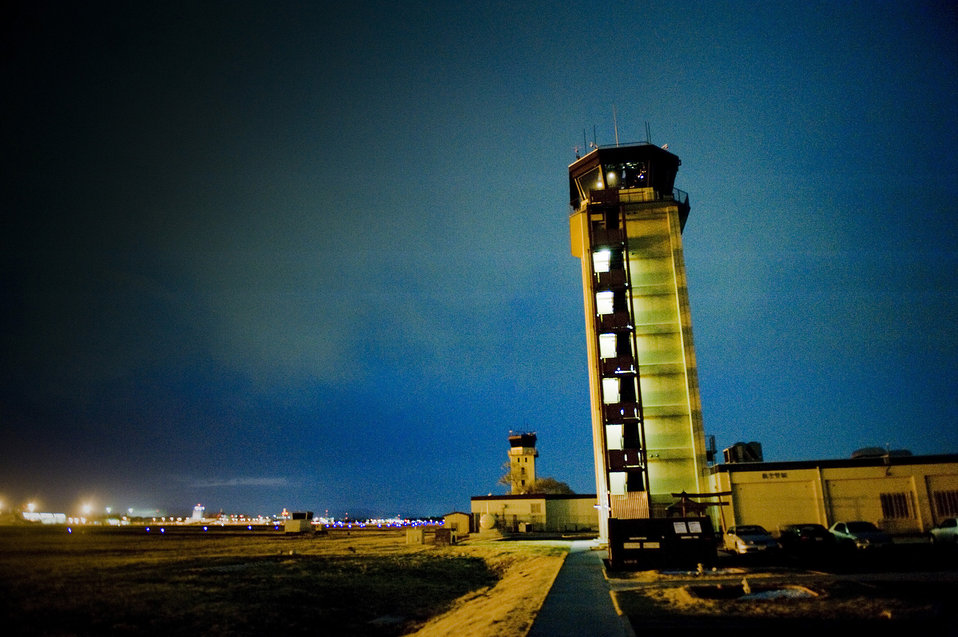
Yokota's ATC manages influx of aircraft for Operation Tomodachi

YOKOTA AIR BASE, Japan -- The air traffic controller tower over looks entire flight line here March 24. Yokota's flight line has received over triple the amount of aircraft due to Operation Tomodachi. The military and civilian aircraft have been from multiple nations carrying supplies, personnel and equipment in direct support of bringing relief efforts and trying to minimize human suffering.